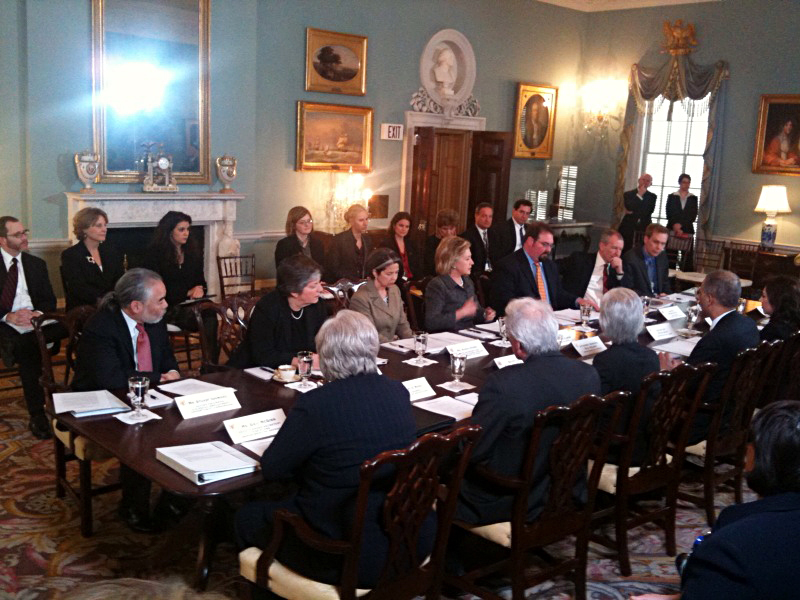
President's Interagency Task Force To Monitor and Combat Trafficking in Persons

U.S. Secretary of State Hillary Rodham Clinton chairs meeting of President's Interagency Task Force to Monitor and Combat Trafficking in Persons at the U.S. Department of State in Washington, DC February 3, 2010.